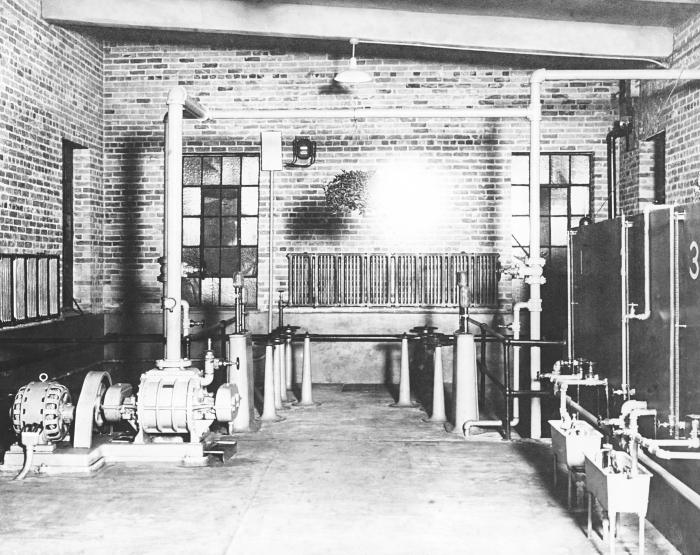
This historic 1916 photograph depicted an interior view of the Chisholm, Minnesota, Water and Light Company's filtration plant, which was used to purify the town's potable water supply. An exterior view was pictured in PHIL image #8481.